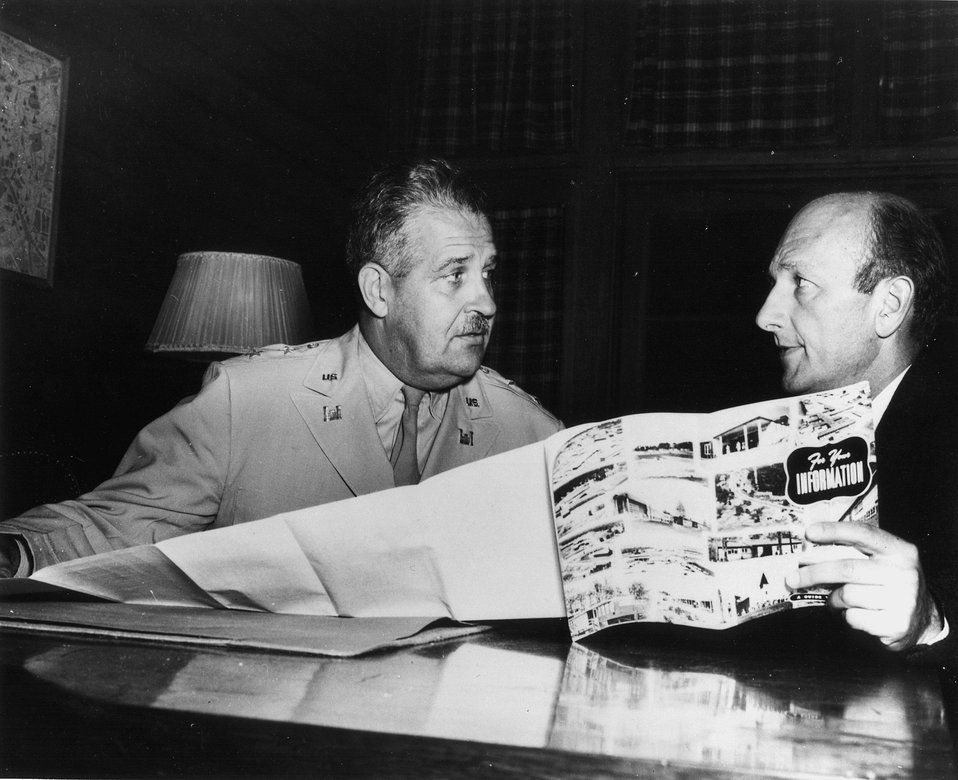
General Leslie R. Groves (left) and David E. Lilienthal at Oak Ridge on October 1, 1946 in the Guest House. c. 1946